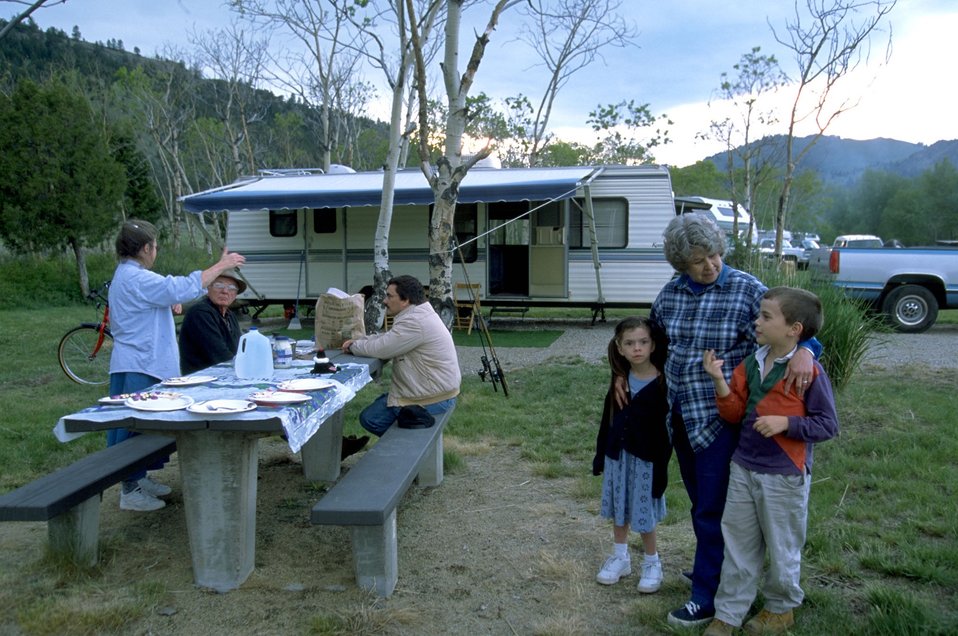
A family enjoying an evening at Divide Campground